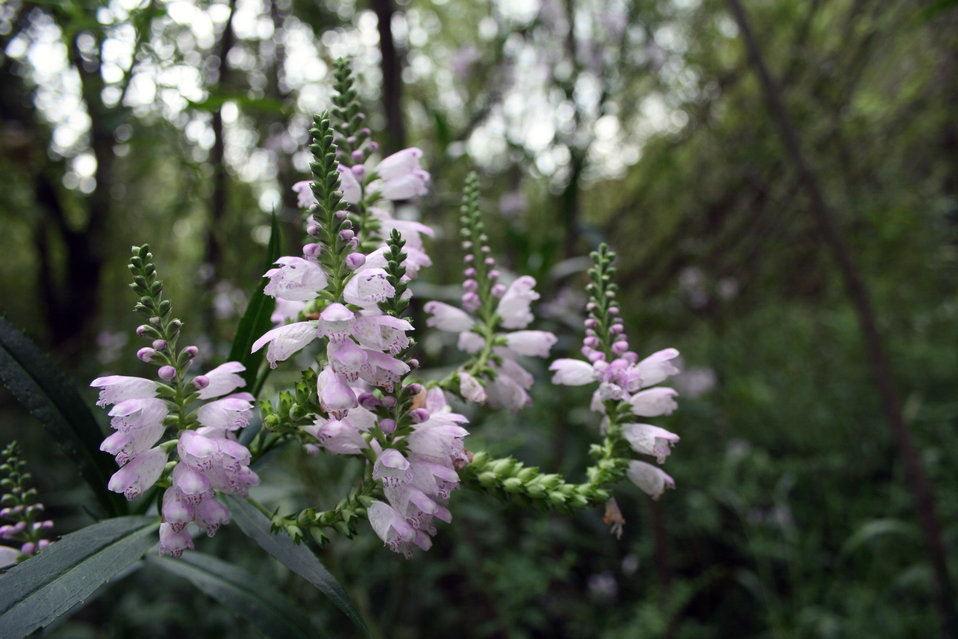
Rapids Lake Unit

Floodplain forests historically dominated much of the floodplain along the Minnesota River. Today, this plant community continues to provide migration and nesting habitat for several significant birds that are a priority for the U.S. Fish and Wildlife Service. These include the red-headed woodpecker, red-shouldered hawk and wood duck. Minnesota Valley National Wildlife Refuge monitors and restores the forest community to include cottonwood, sliver maple, American elm, green ash, and wood nettle.